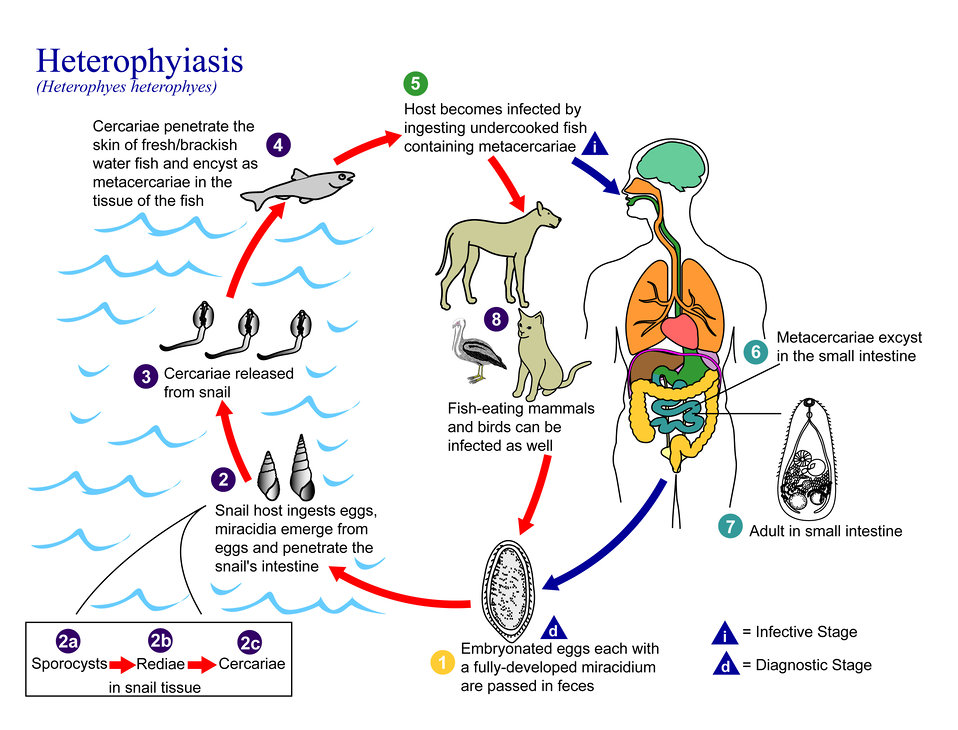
This is an illustration of the life cycle of Heterophyes heterophyes, the causal agent of Heterophyiasis.